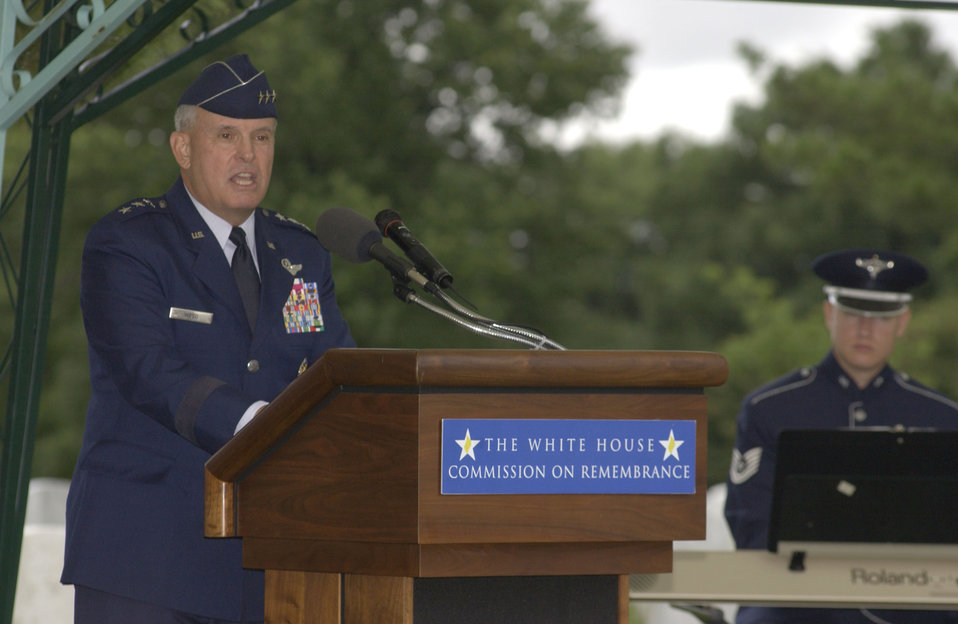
Khobar Towers 10th Anniversary

Lt. Gen. Stephen G. Wood speaks at the 10th anniversary remembrance of the Khobar Towers bombing on Sunday, June 25, at Arlington National Cemetery, Va. Nineteen Airmen were killed in the terrorist bombing at Dhahran Air Base, Saudi Arabia. General Wood is deputy chief of staff for strategic plans and programs at headquarters Air Force.